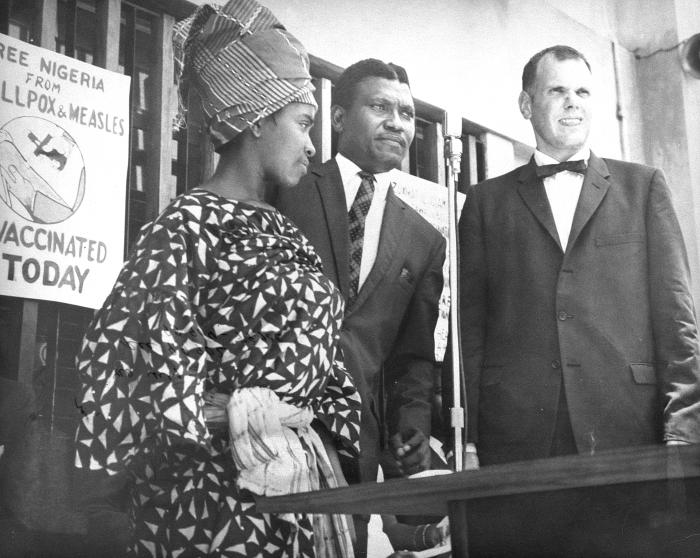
This was a panel of Smallpox Eradication program officials, which included Dr. E. A. Smith and Dr. Stanley Foster (Rt).